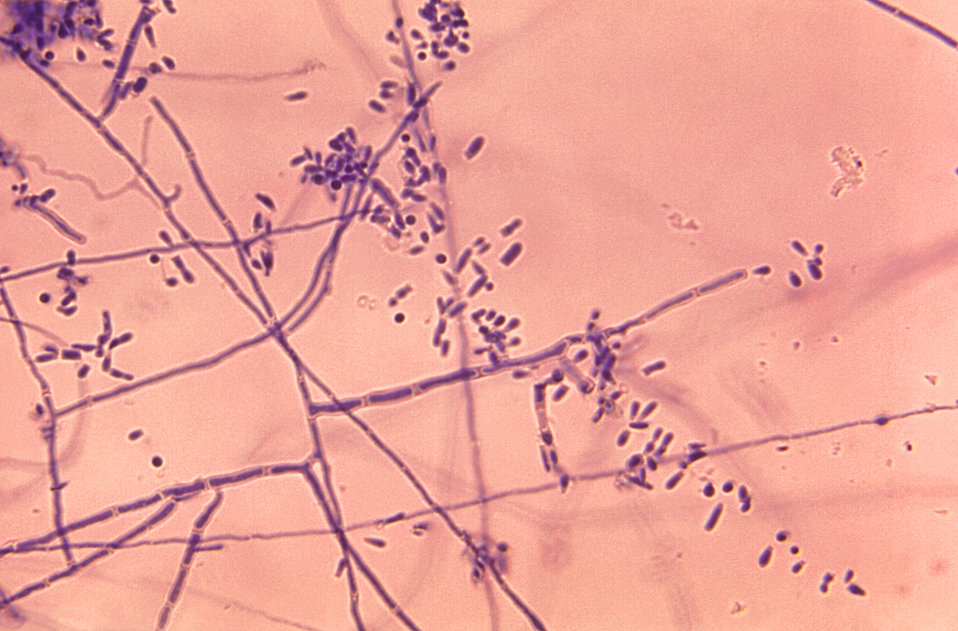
Under a magnification of 320X, this photomicrograph depicts the ultrastructural features exhibited by the dermatophytic fungus, Trichophyton yaoundei including numbers of microconidia, which are the organism's reproductive cells, otherwise known as spores, and diaphanous, threadlike hyphal filaments.